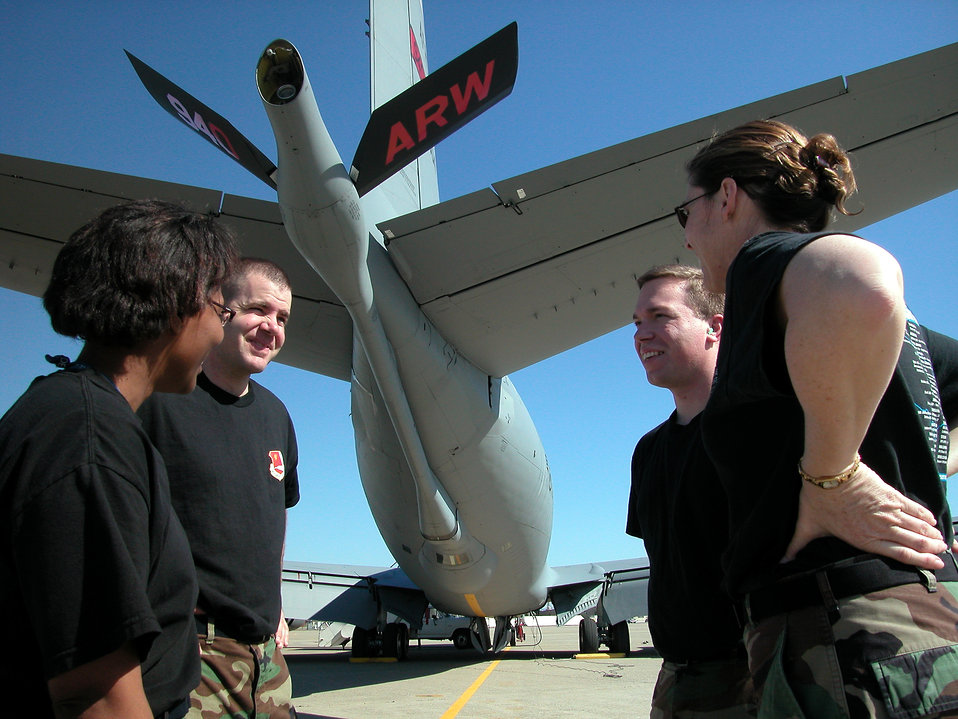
Operation Noble Eagle

BEALE AIR FORCE BASE, Calif. -- Crew chiefs with the 940th Aircraft Maintenance Squadron here discuss the day's maintenance tasks near a KC-135 Stratotanker. The Stratotankers participate in homeland defense missions in the western United States. The Airmen are (from left) Staff Sgt. Alison Baker, Airman 1st Class Darren Phelps, Staff Sgt. Brandon Kennerley and Senior Master Sgt. Nancy Hinojosa.